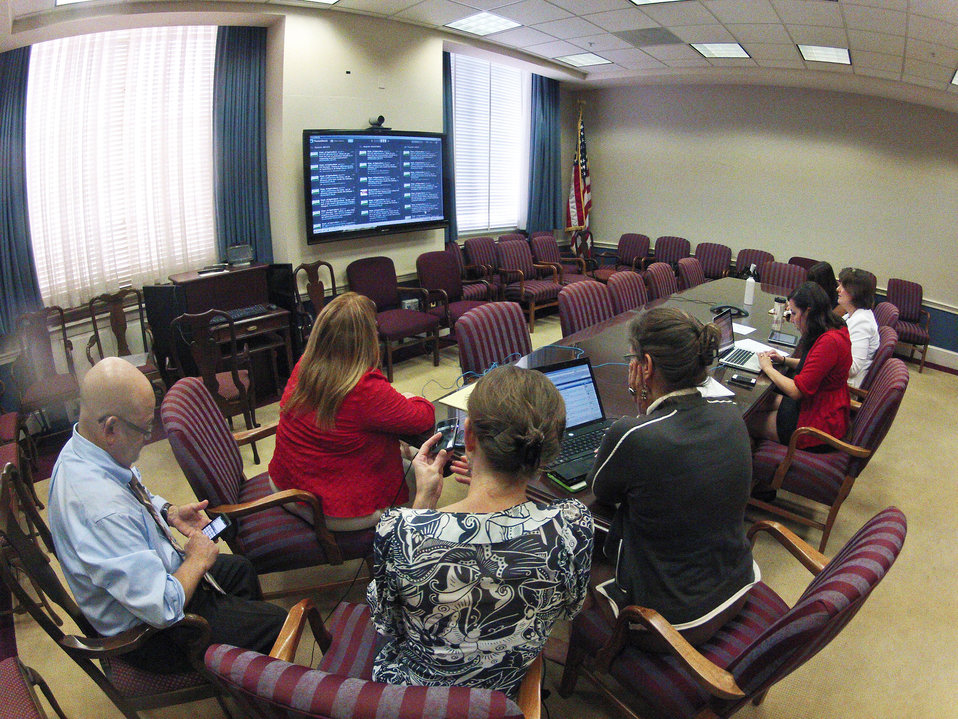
Agriculture Deputy Secretary Kathleen Merrigan hosts a live Twitter chat focused on the Department’s support of local and regional food systems and the recent release of the 2.0 version of the Know Your Farmer, Know Your Food Compass on Tuesday, July 4, 2012, in Washington, D.C. Deputy Secretary Merrigan utilized her staff and other subject matter experts armed with smart phones, iPad, laptop and workstation computers to provide useful answers and resources to questions from the public, during the #ASKUSDA Virtual Office Hours on Local Food.